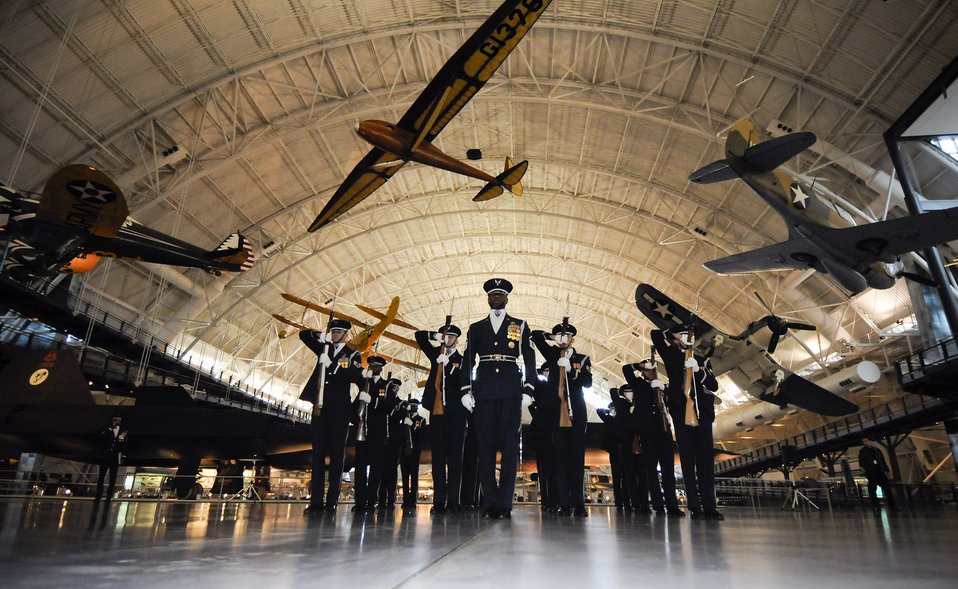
Precision at its finest

The U.S. Air Force Honor Guard Drill Team from Bolling Air Force Base, D.C., performs Dec. 18 at the Udvar-Hazy Air and Space Museum in Chantilly, Va. The drill team's mission is to recruit, retain and inspire men and women across the globe for the Air Force.